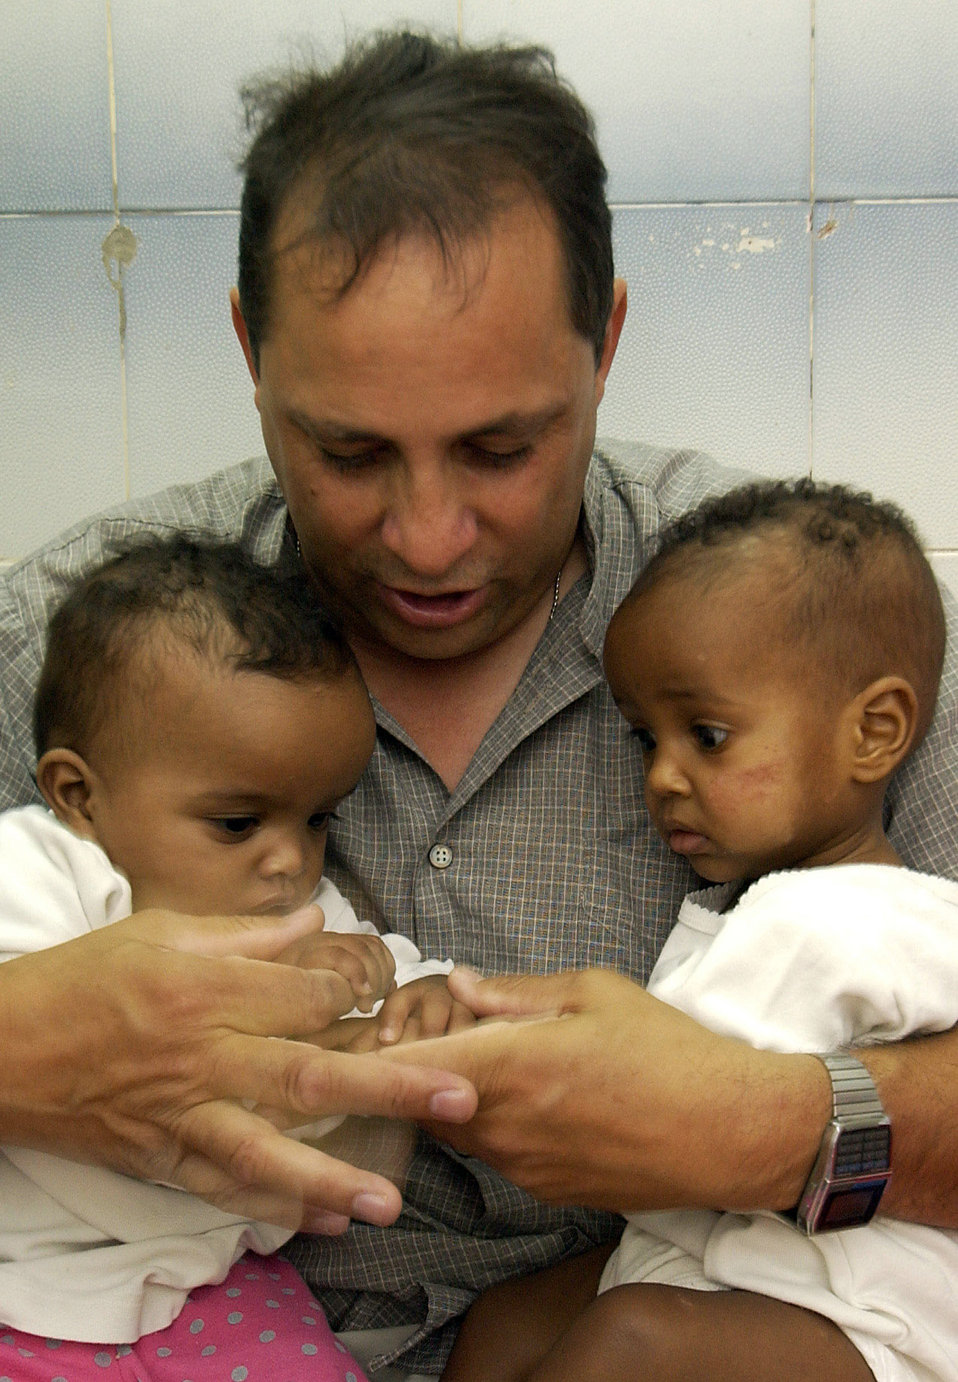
Helping Hand

AFRICA -- Master Sgt. Samson Ortiz plays with two toddlers while volunteering at an orphanage here. He is one of many U.S. servicemembers who volunteer to help feed, change, bathe and clothe the infants twice a day. He is assigned to the 4th Combat Camera Squadron at March Air Reserve Base, Calif.